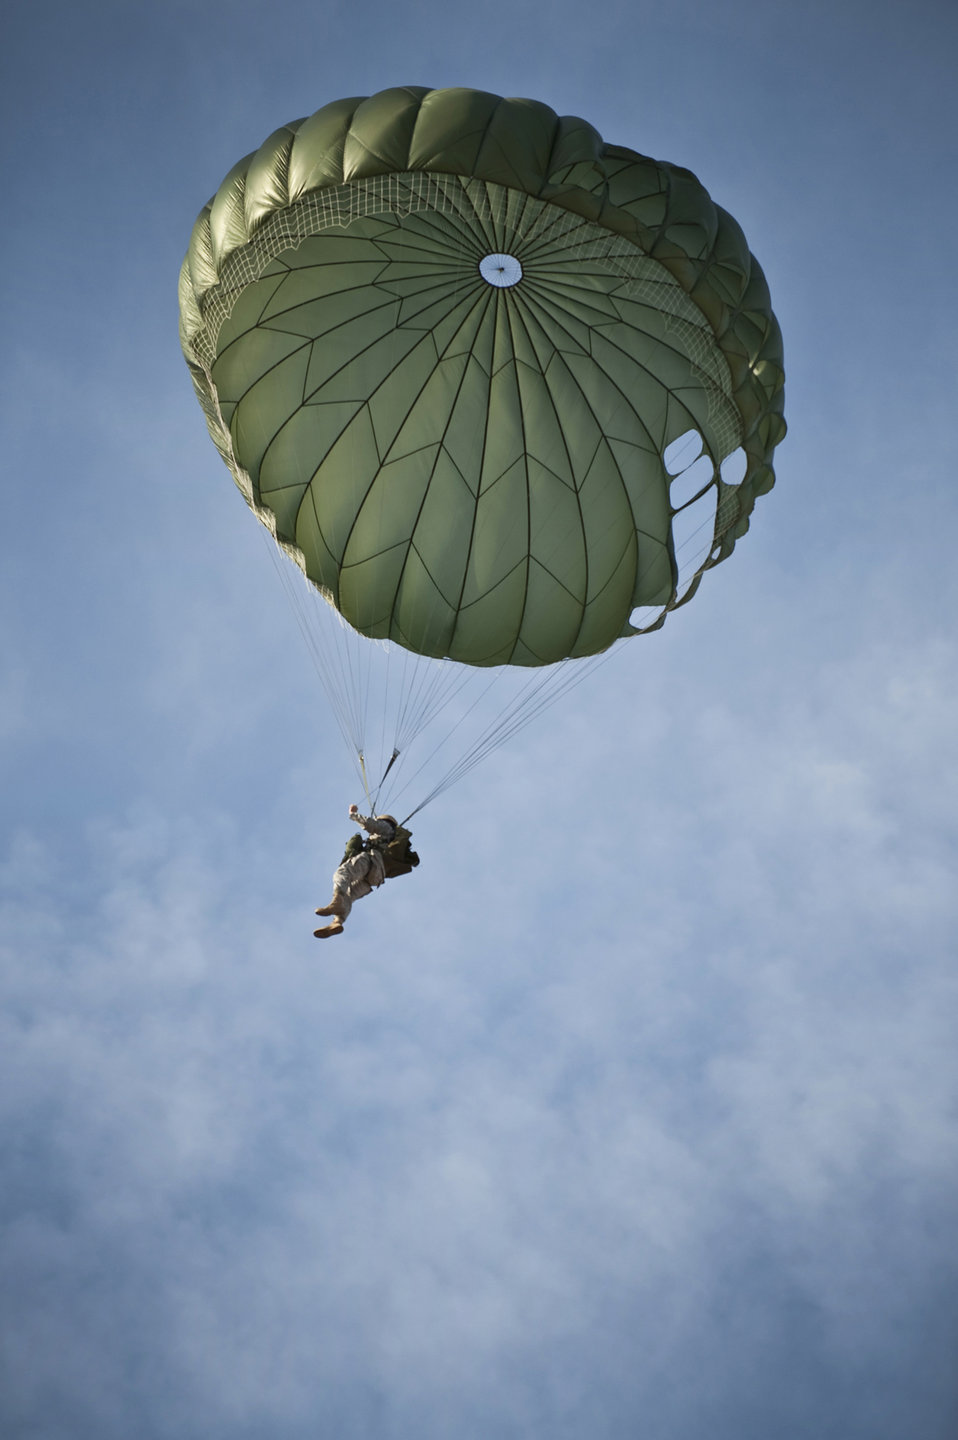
Airmen and Soldiers conduct airdrop and sling-load training

An Airman from 820th RED HORSE Squadron descends after a static-line jump from a CH-47 Chinook helicopter April 15, 2011, as part of airdrop and sling-load training at Nellis Air Force Base, Nev.